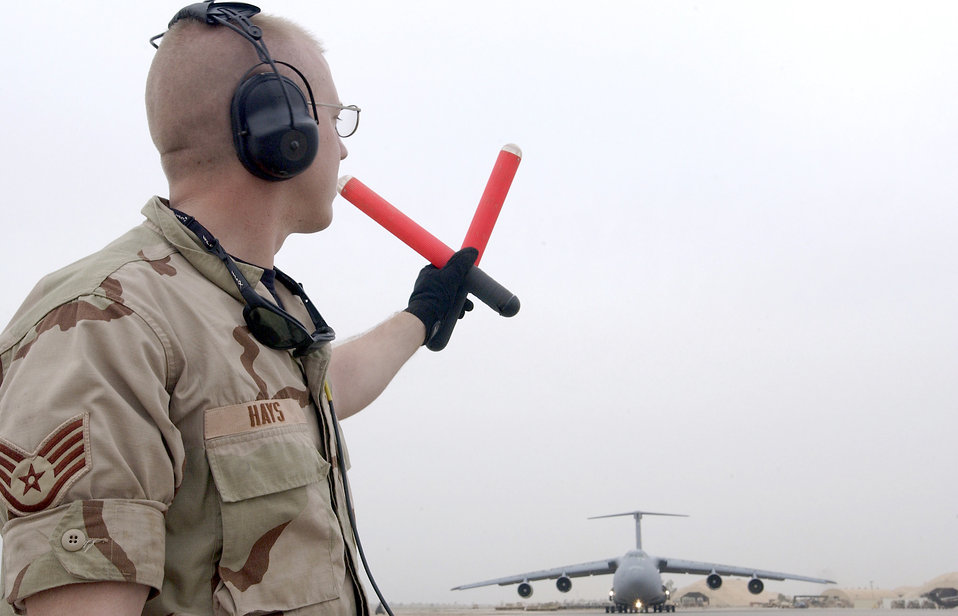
Over here!

BALAD AIR BASE, Iraq -- Staff Sgt. Michael Hays marshals a C-5 Galaxy here. He is a crew chief with the 332nd Expeditionary Aircraft Maintenance Squadron.